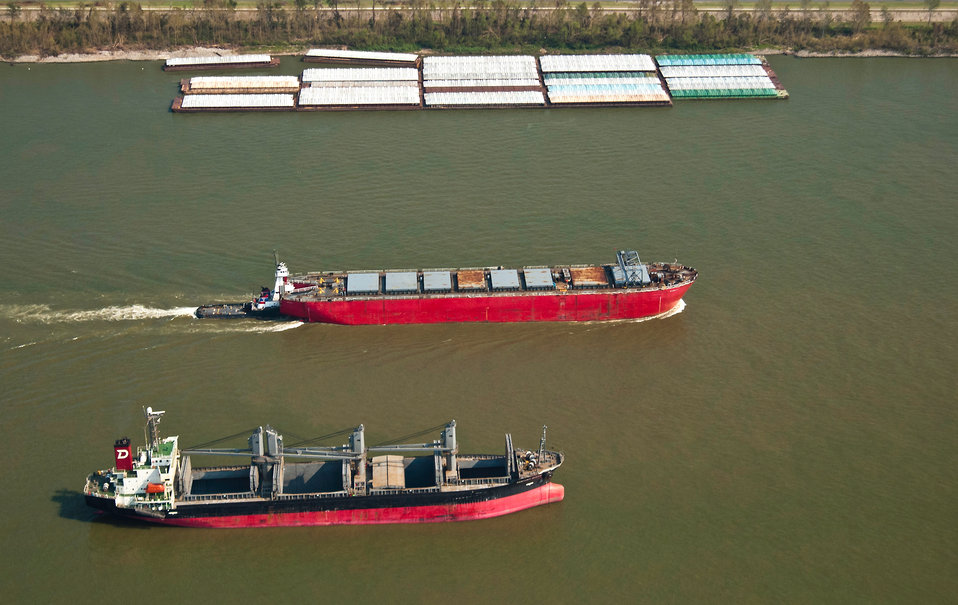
Barge and ship traffic transporting export cargo on the Mississippi River in the Port of New Orleans, New Orleans, LA on Sept. 9, 2005.